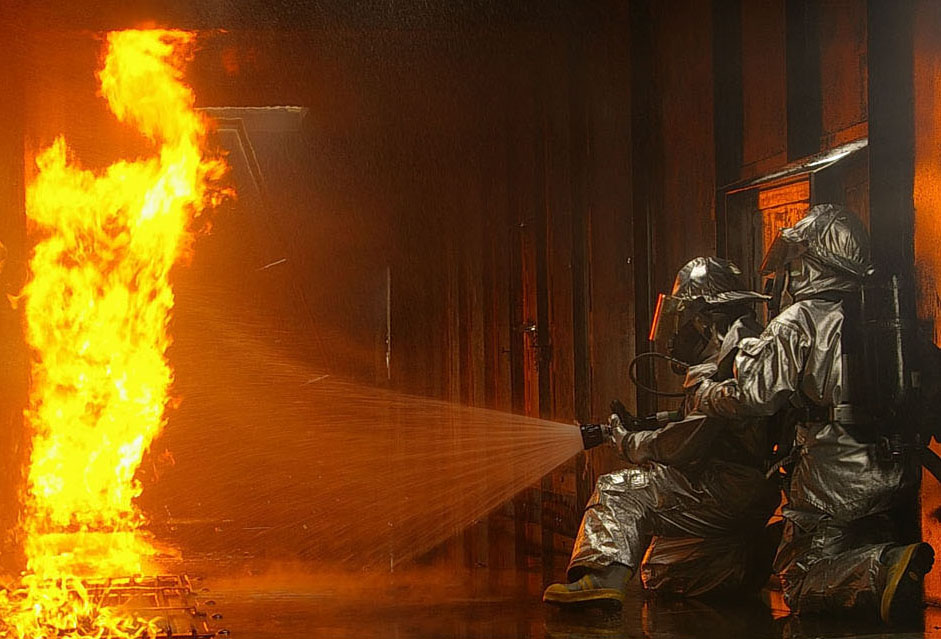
Stifling the blaze

Civilians from the fire department at Lajes Field, Azores, battle a fire June 4 in an aircraft fire trainer at Royal Air Force Mildenhall, England.